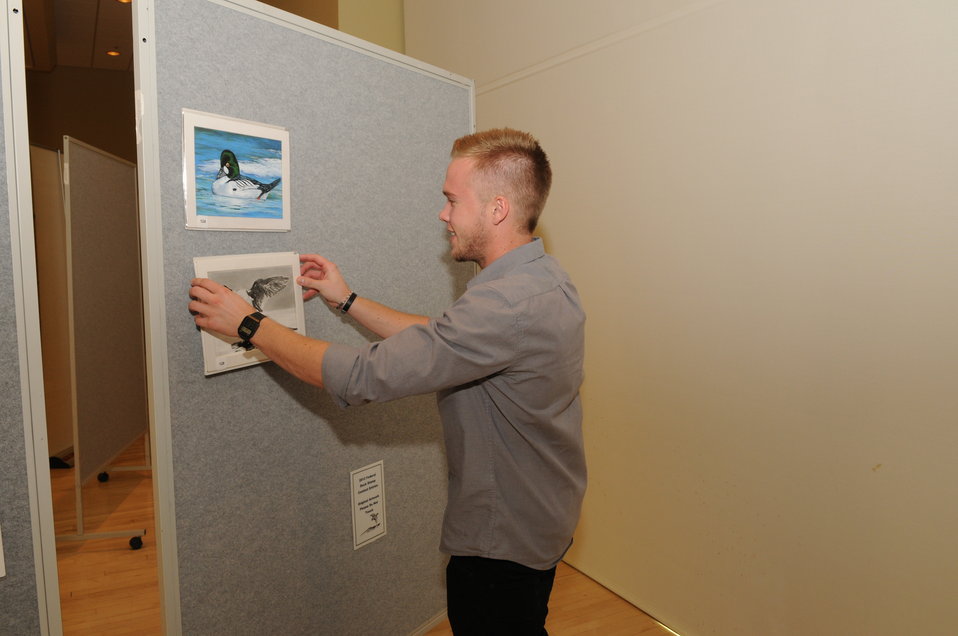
Artwork Hanging

The U.S. Fish & Wildlife Service sponsored the 2012 Federal Duck Stamp Art Contest September 28 and 29 in Ogden, Utah, at Weber State University. A panel of five judges was responsible for choosing the art work used to design the 2013-2014 Migratory Bird Hunting and Conservation Stamp.